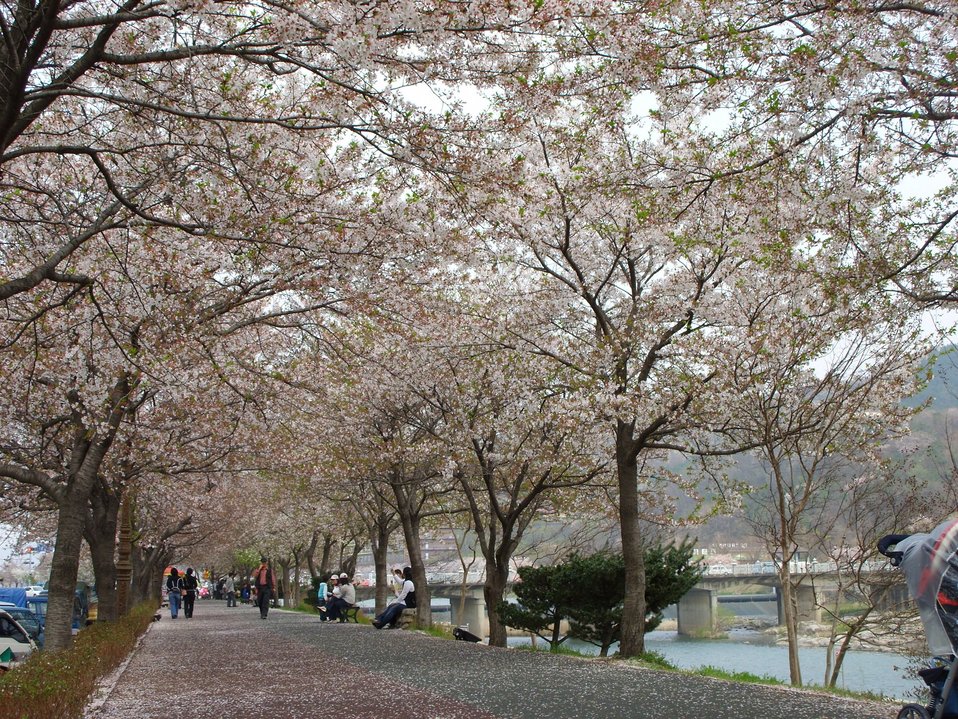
Yocheon River (Namwon), in spring